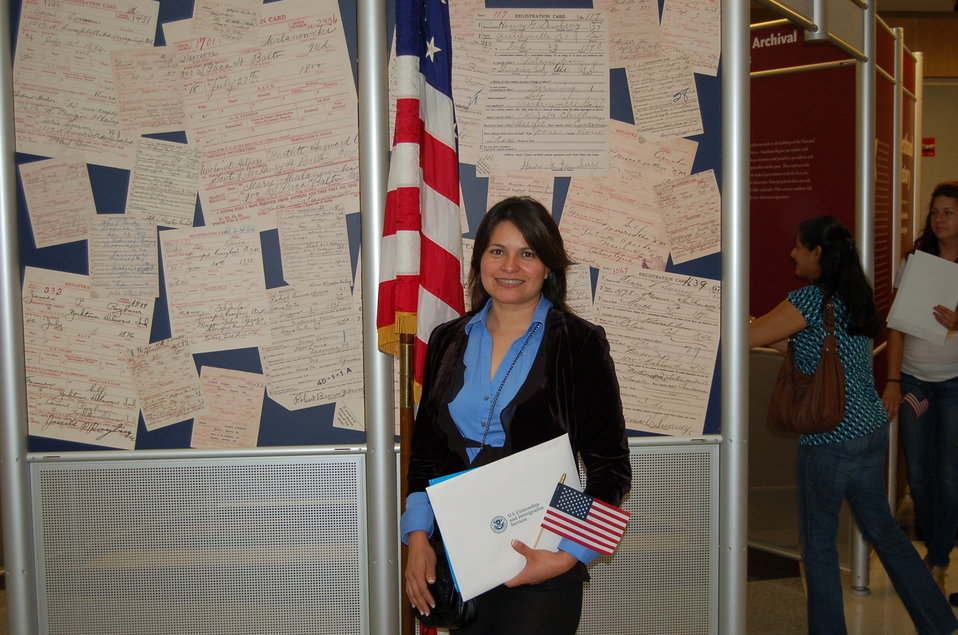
New Citizens